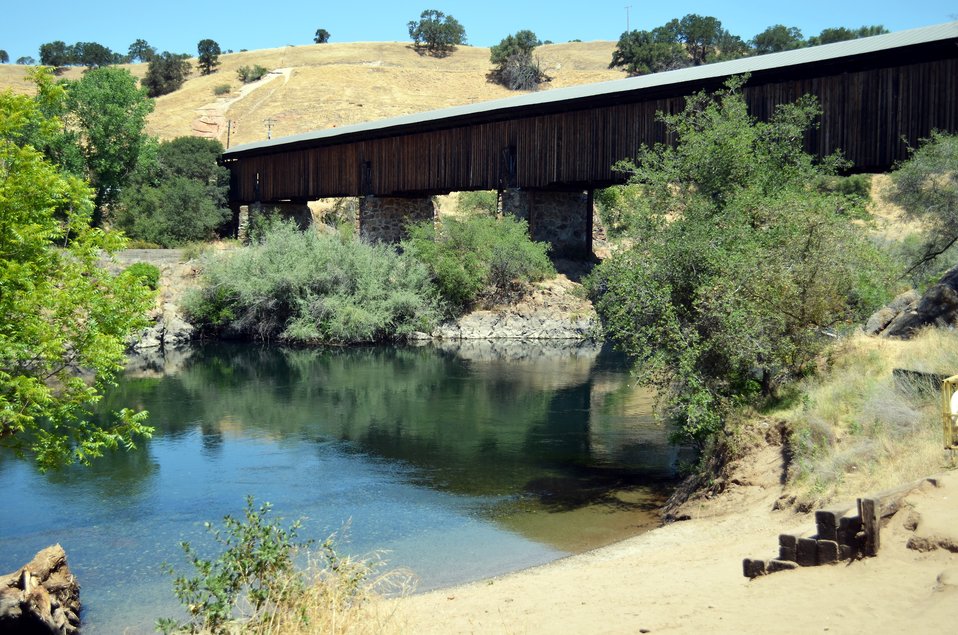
Corps to restore historic Knights Ferry Covered Bridge

The Knights Ferry Covered Bridge at Stanislaus River Parks near Oakdale, Calif., shown July 2, 2012. Engineers with the U.S. Army Corps of Engineers Sacramento District inspected the historic bridge and are working on a design, due in October, to fix minor structural issues. The bridge was approved for inclusion as a historic landmark in the Library of Congress 2012.